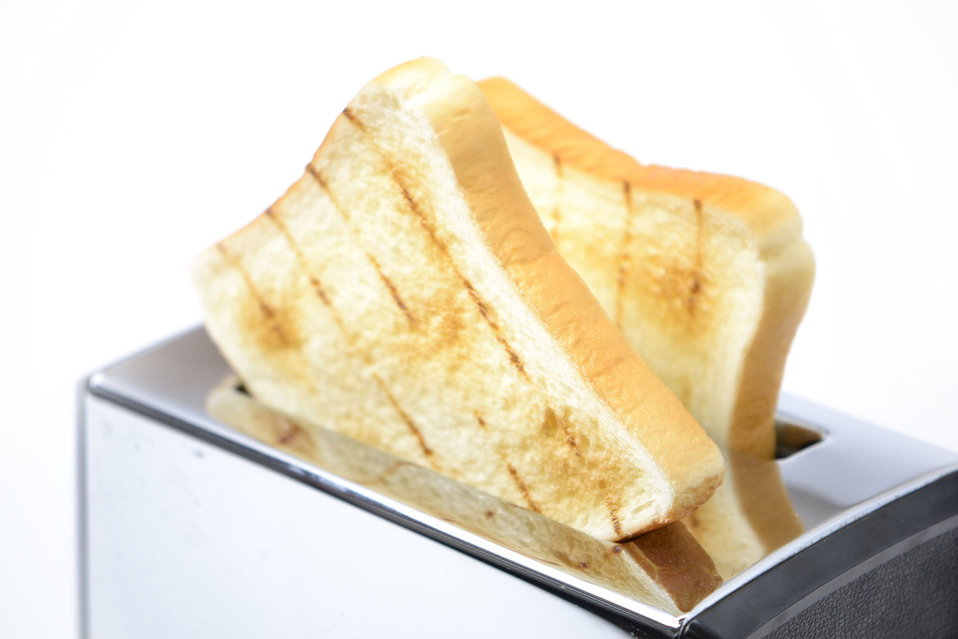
Toaster and slices of bread.